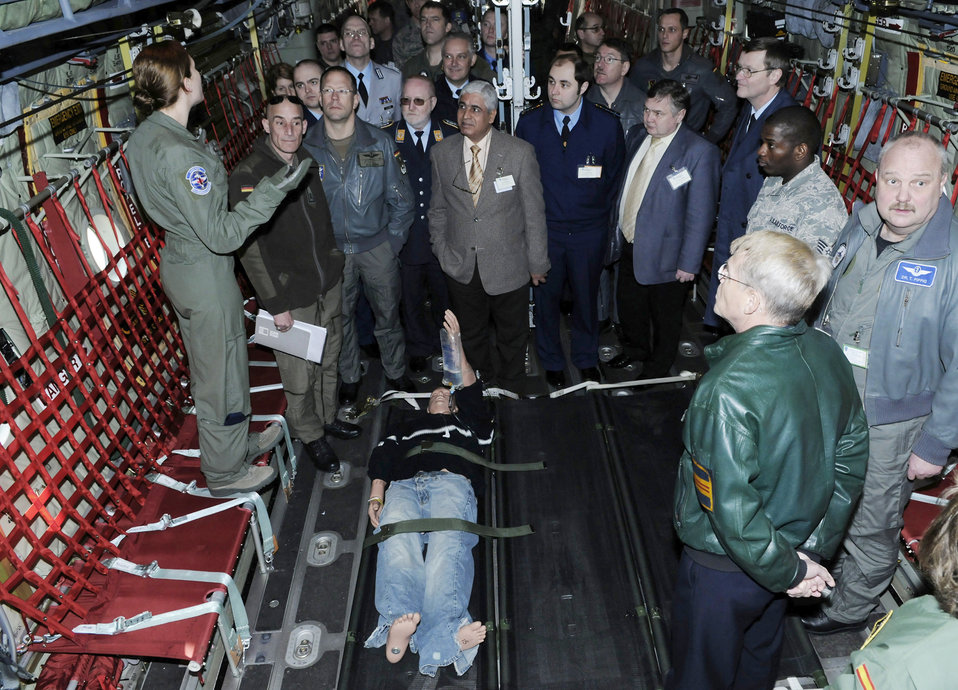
NATO, USAFE host international flight surgeons

Senior Airman Teryn Granger explains critical patient care on a C-130J Super Hercules March 15, 2011, at Ramstein Air Base, Germany, during the 2011 European Flight Surgeons Conference. The focus of the conference is to build partnerships and develop advancements in aeromedical evacuation and critical-care air transport. Airman Granger is assigned to the 86th Aeromedical Evacuation Squadron.